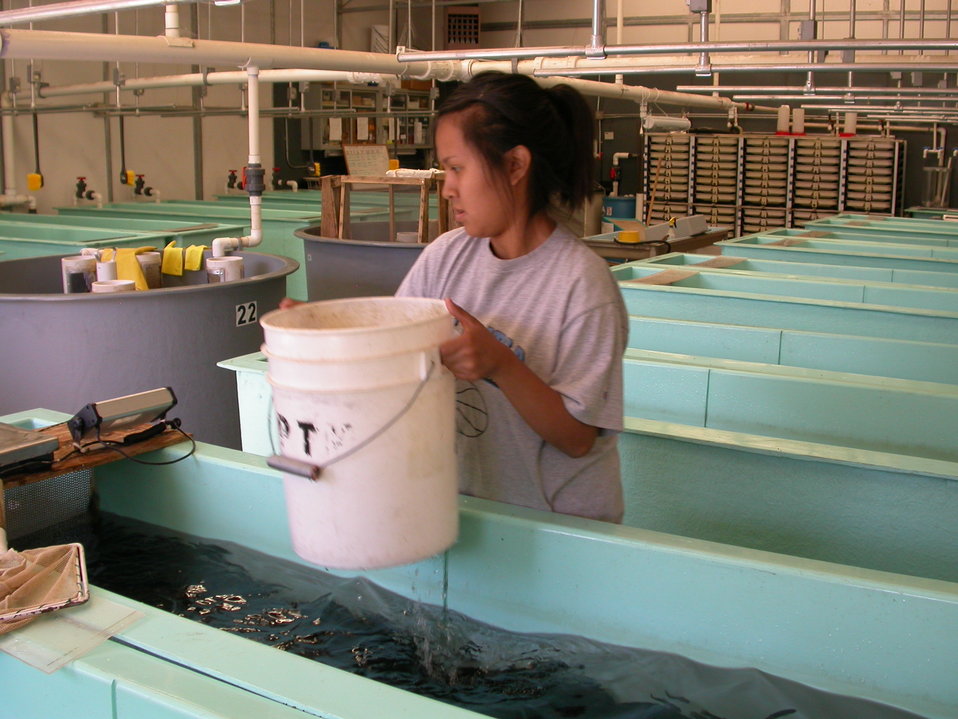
Working in a Fishery